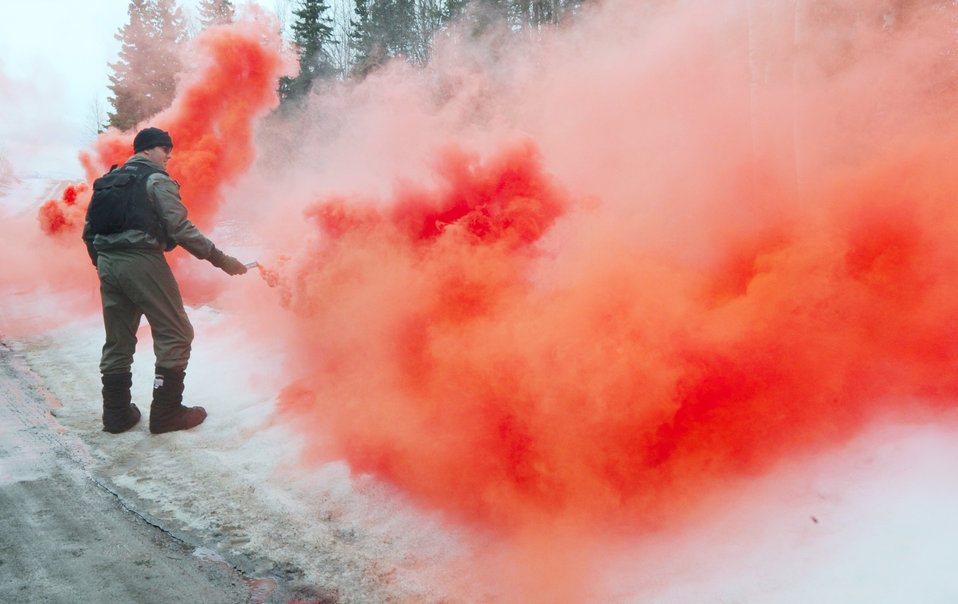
Airmen train for cold weather survival

Capt. Josh Peck practices sending a flare signal during survival, evasion, resistance and escape refresher training April 12, 2010, at Elmendorf Air Force Base, Alaska. Captain Peck is a pilot with the 962nd Airborne Air Control Squadron.